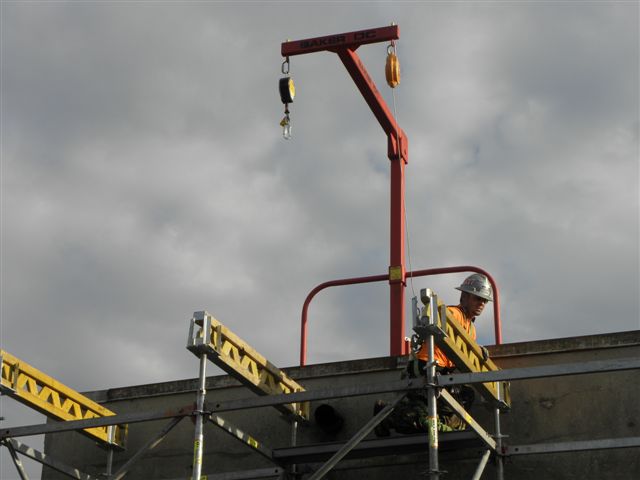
P and R Reactor decommissioning

Workers use a leading edge anchorage connector to work safely with building scaffolds at upper elevations during the deactivation and decommissioning of P and R reactors.